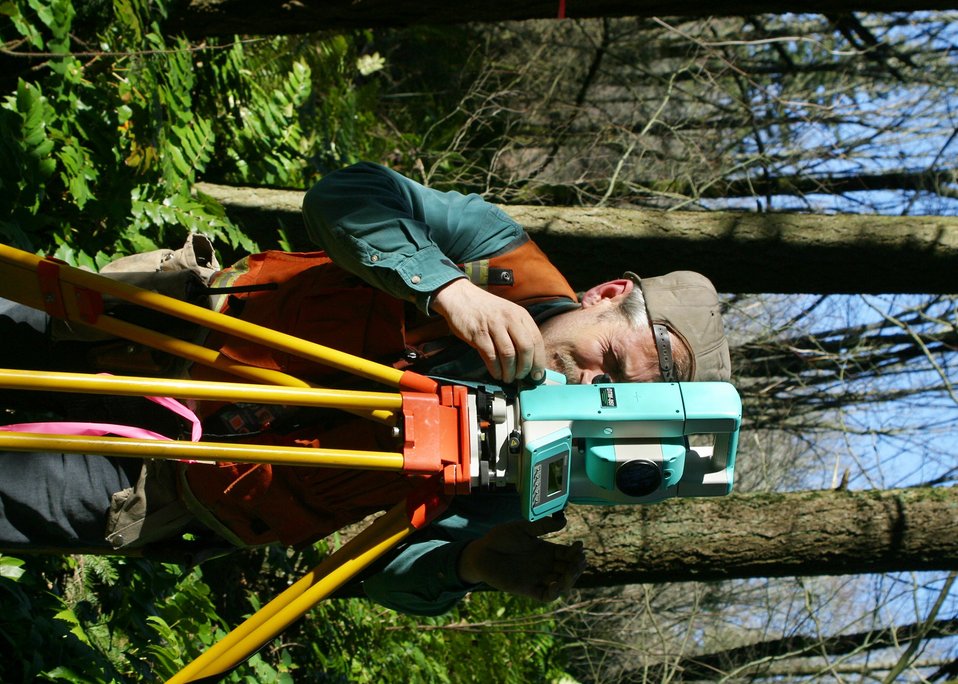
Steve Kaiser Land Surveyor near the Willamette Stone survey Marker. BLM is the only government agency who can do legal public land boundary surveys. 2-7-03 Photo: John Craig